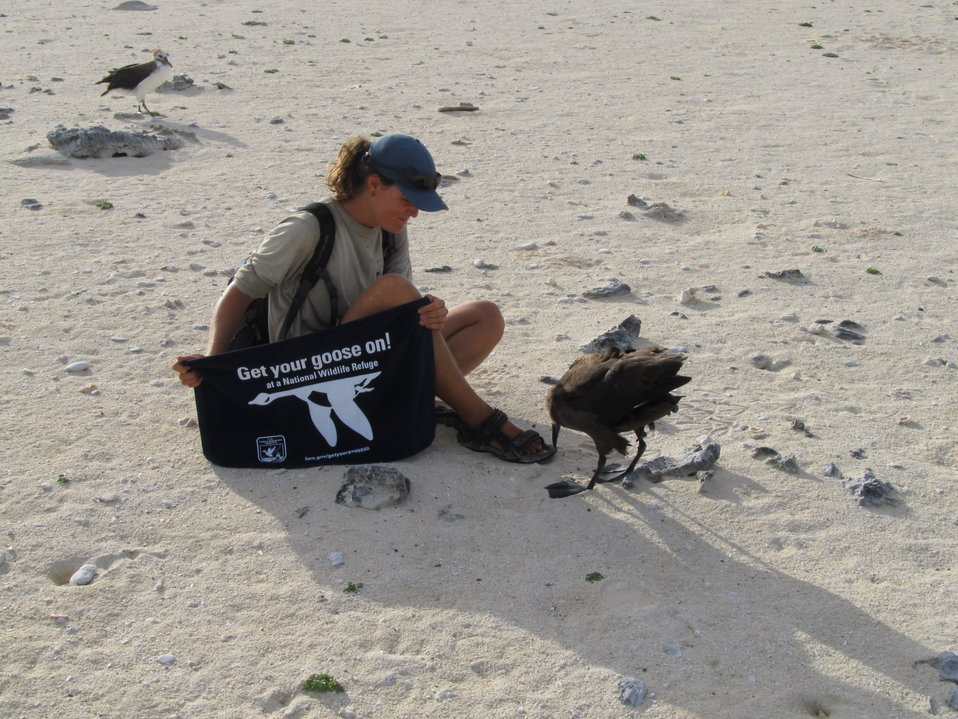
Get Your Goose On! - Albatross Style

Photo taken at Laysan Island in the Papahanaumokuakea Marine National Monument, Hawaiian Islands National Wildlife Refuge. Laysan is located approximately 800 miles northwest of Honolulu, Hawaii and is a remote field camp staffed year round for habitat restoration and population monitoring.